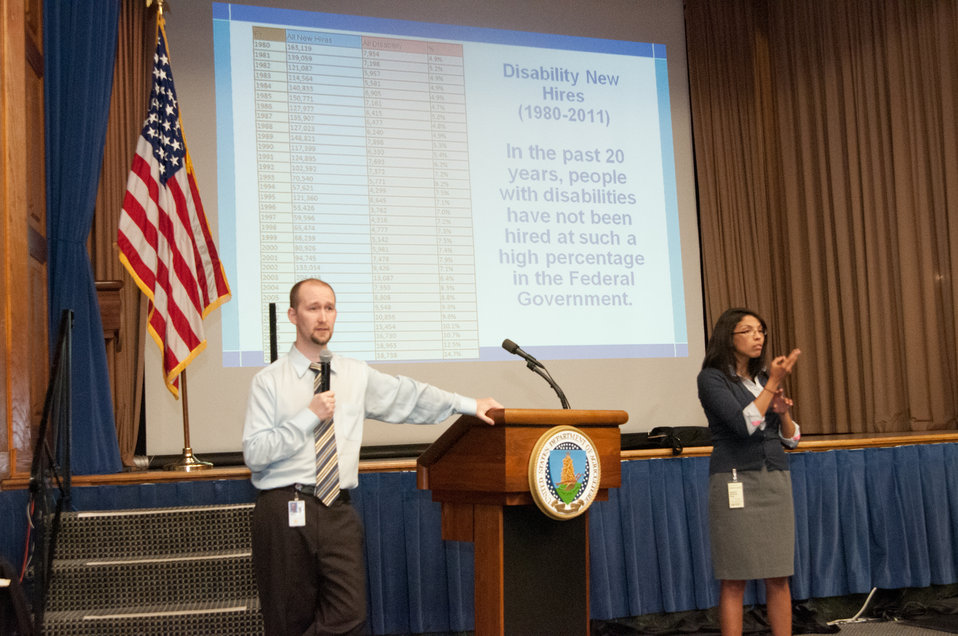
Office of Personnel Management (OPM) Diversity and Inclusion Program Manager Michael Murray discusses diversity and inclusion at the U.S. Department of Agriculture (USDA) Office of Human Resources Management (OHRM) Disability Employment Program Team Training at USDA in Washington, D.C. on Tuesday, May 14, 2013. Olivia Battle interprets for hearing impaired employees during the event.